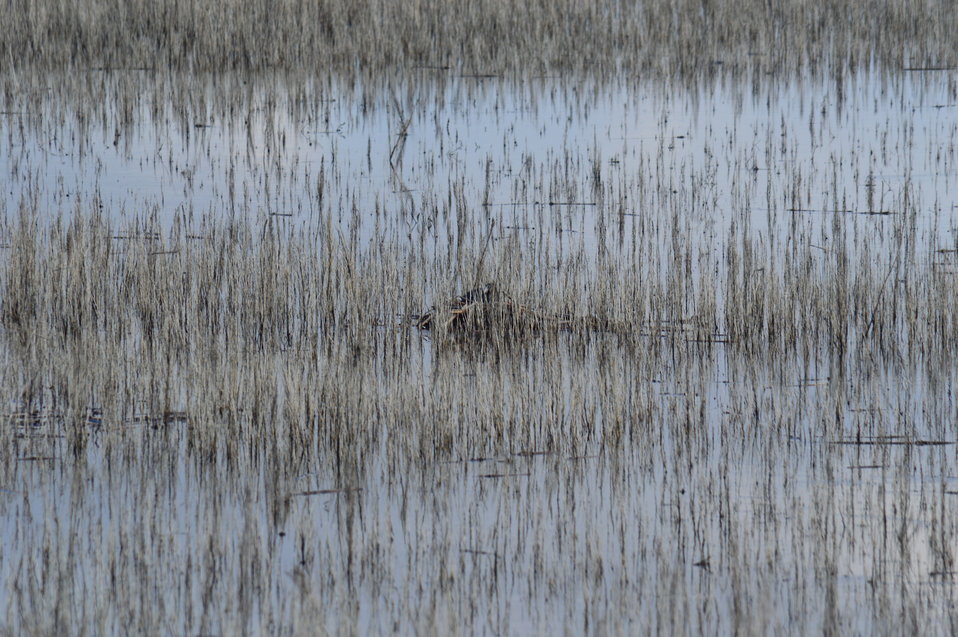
Camouflaged Nest

Scenery and wildlife at Sand Lake National Wildlife Refuge in South Dakota